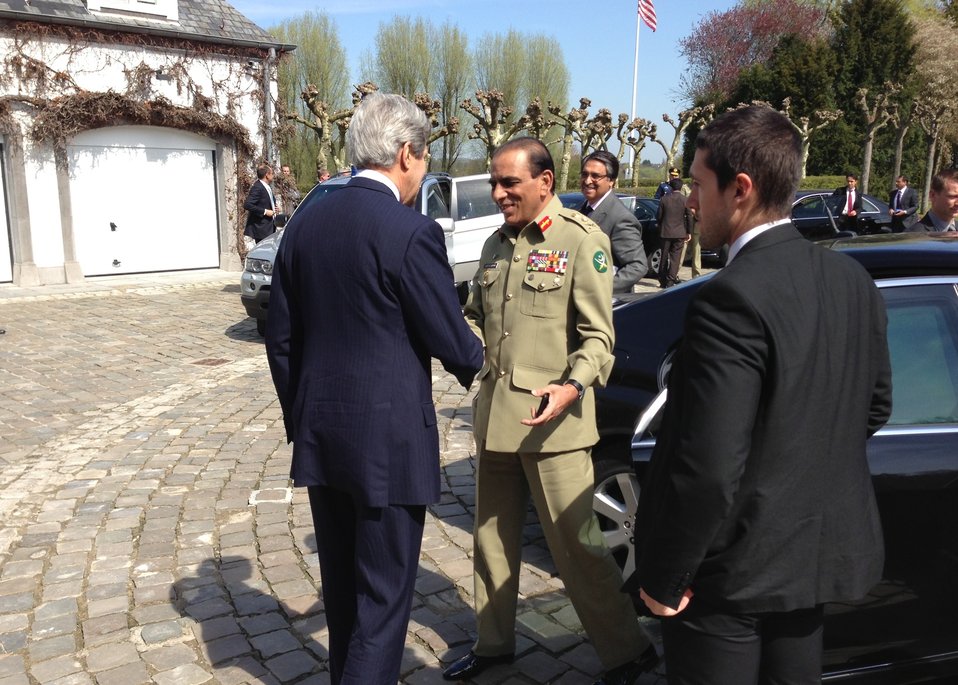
Secretary Kerry Welcomes Pakistani Chief of Army Staff General Ashfaq Kayani

U.S. Secretary of State John Kerry welcomes Pakistani Chief of Army Staff General Ashfaq Kayani before a trilateral meeting with Afghan President Hamid Karzai in Brussels, Belgium, on April 24, 2013.